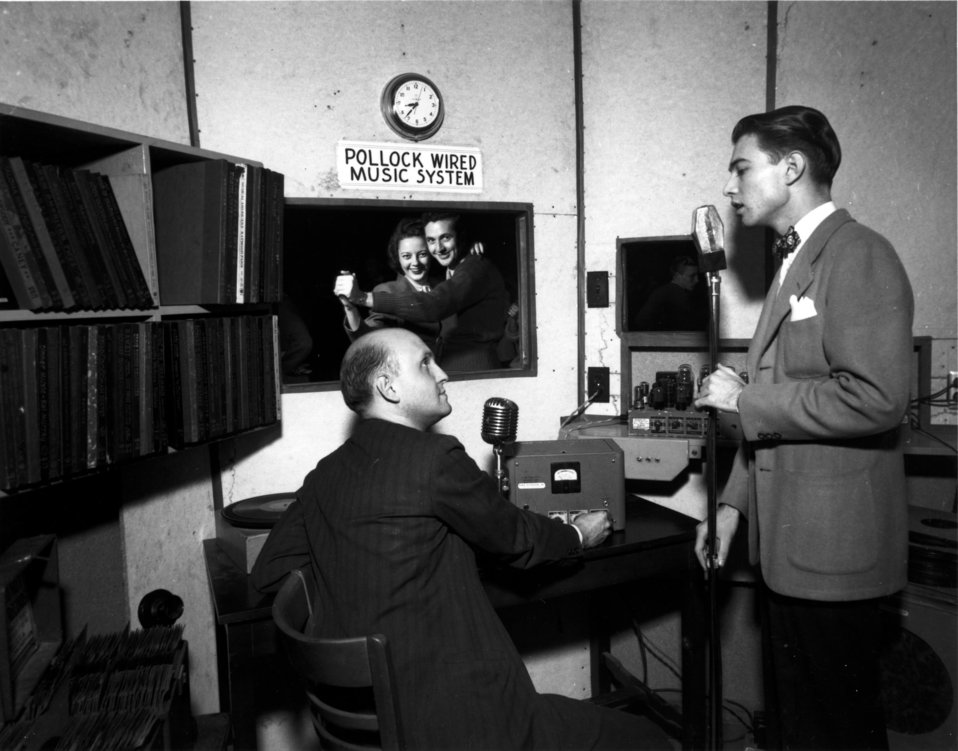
Business activity at Oak Ridge